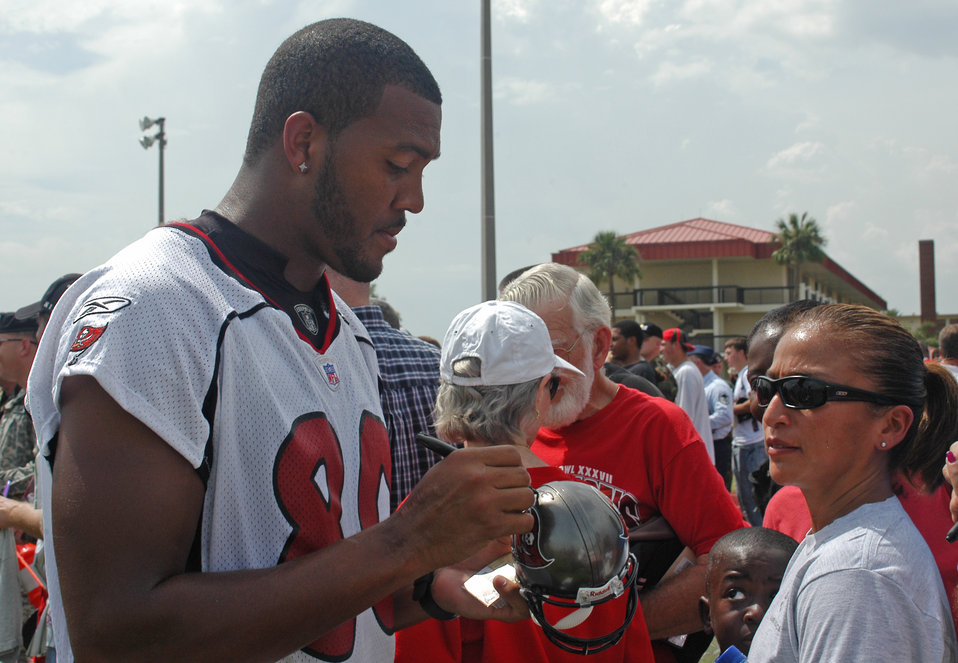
Tampa Bay plays at MacDill

Buccaneers wide receiver Michael Clayton signs a miniature helmet for a fan after the pre-game, walkthrough practice held at MacDill Air Force Base, Fla., on Aug. 18. The practice was closed to the general public but open to base personnel. Airmen who attended the practice were able to get an up-close look at the 2006 Buccaneers team.